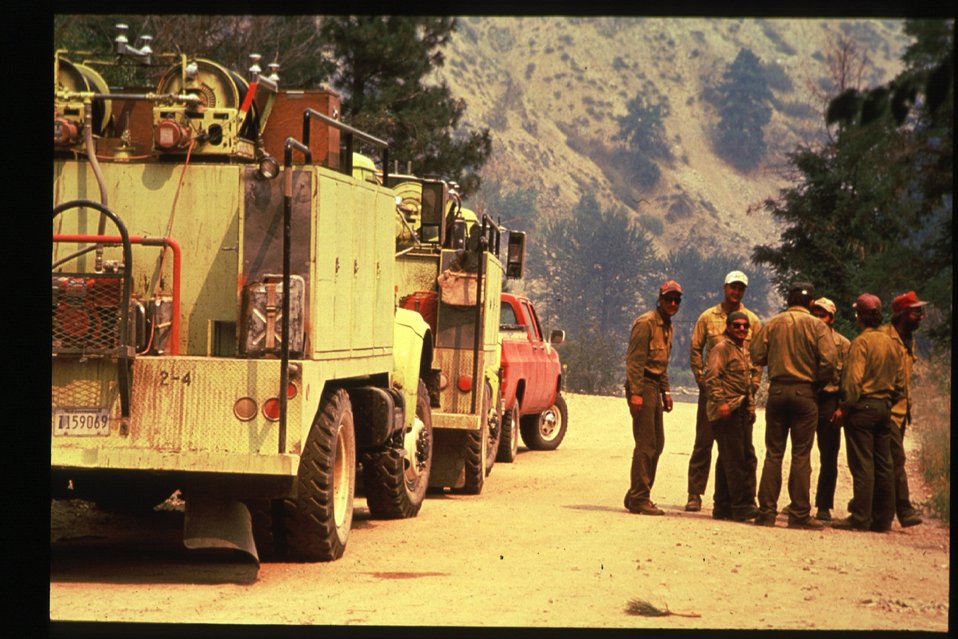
Boise Foothills Fire Danskin Mountains and South Fork of Boise River Wild Fire Fighters Four River Field Office LSRD Lower Snake River District